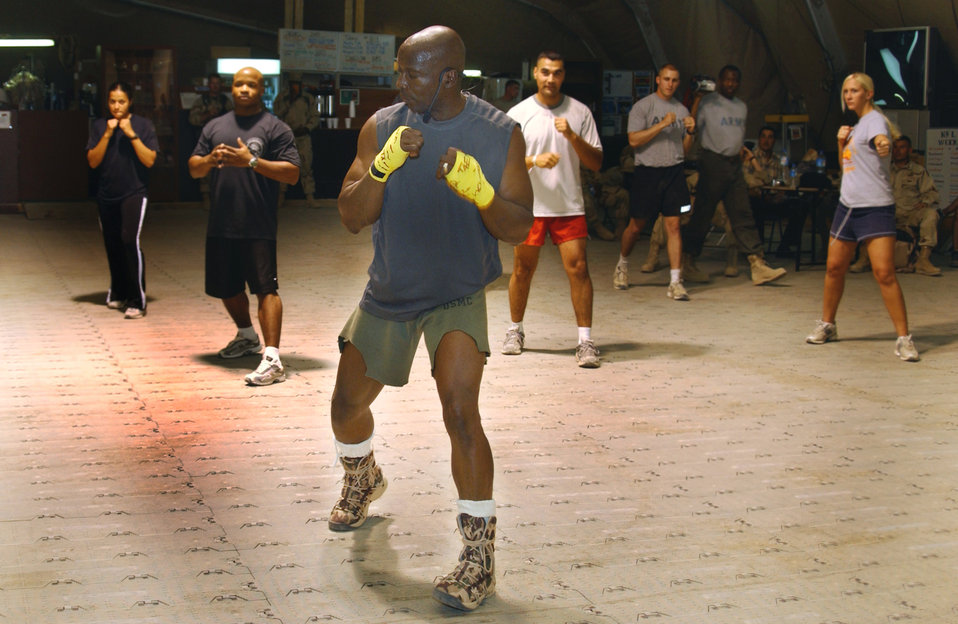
Tae Bo in Iraq

KIRKUK AIR BASE, Iraq -- Billy Blanks leads a Tae Bo training session for people stationed here Sept. 28. Blanks was touring different bases throughout Iraq signing autographs and performing Tae Bo sessions for troops deployed here.